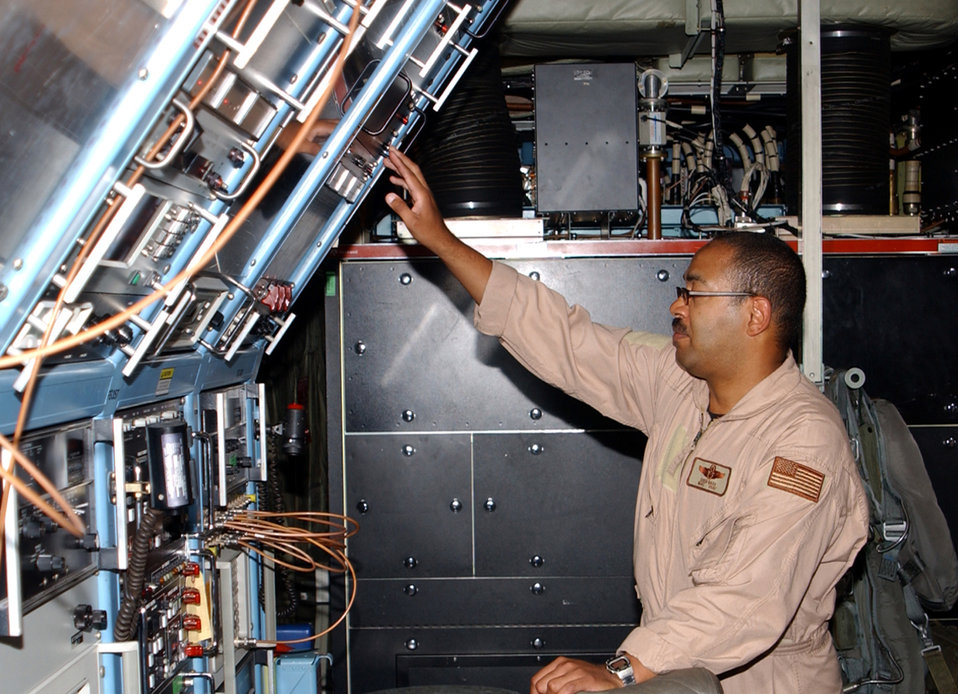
Waging war with wits, words

OPERATION ENDURING FREEDOM -- Master Sgt. David Bass, an electronic command system operator for EC-130 Command Solo missions, makes a final adjustment to one of his radio frequency controls. Bass is assigned to the Pennsylvania Air National Guard 193rd Special Operations Wing in Harrisburg.